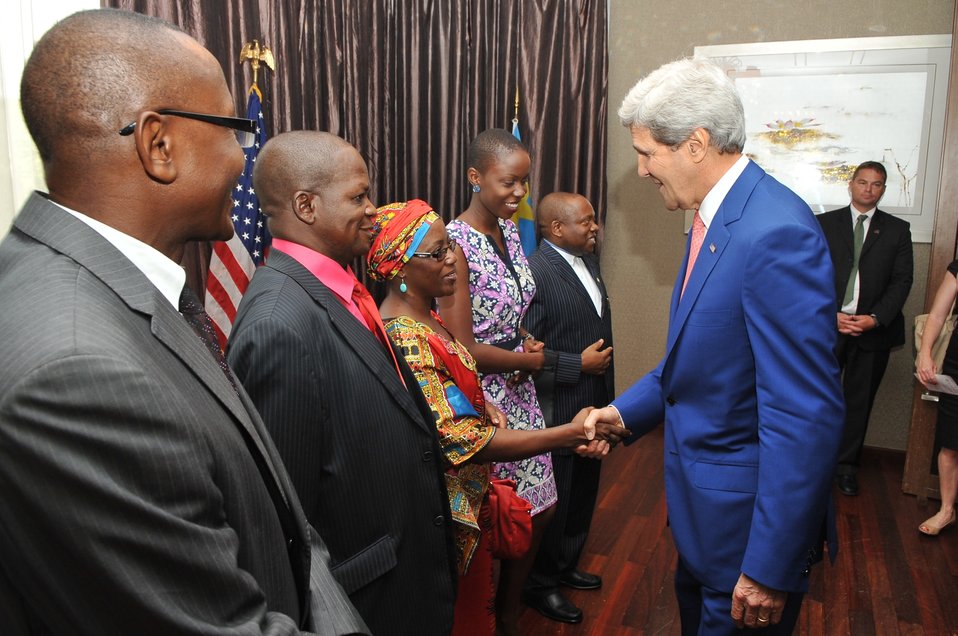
Secretary Kerry Kerry Meets With Elections Activists in Democratic Republic of Congo

U.S. Secretary of State John Kerry shakes hands with activists concerned about democracy and fair elections in the Democratic Republic of Congo before a meeting in Kinshasa on May 4, 2014.